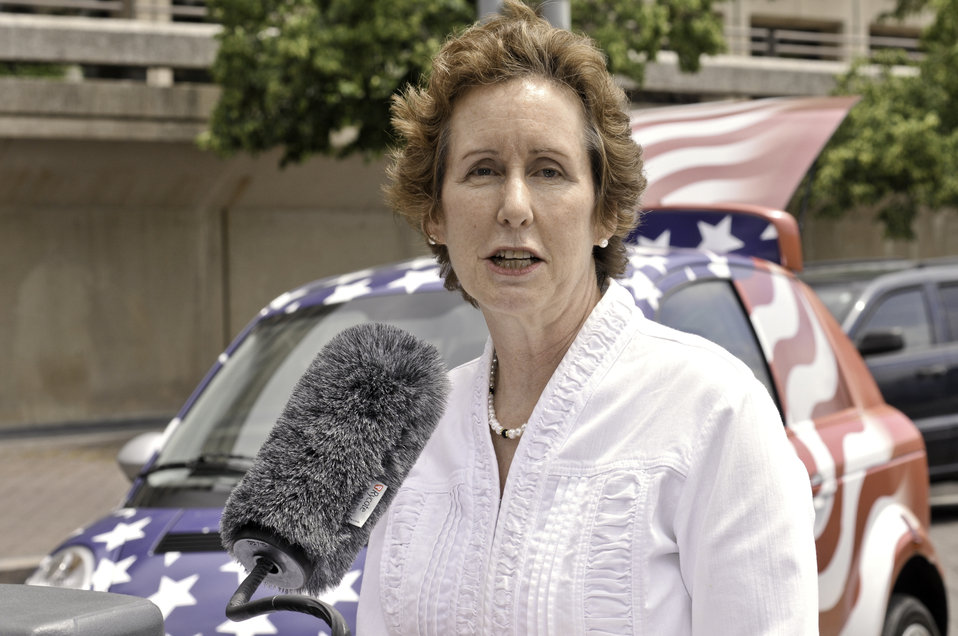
Clean Fleets Announcement 4 of 14

Martha Johnson, General Services Administrator, speaks at a Clean Fleets event held at the Department of Energy.